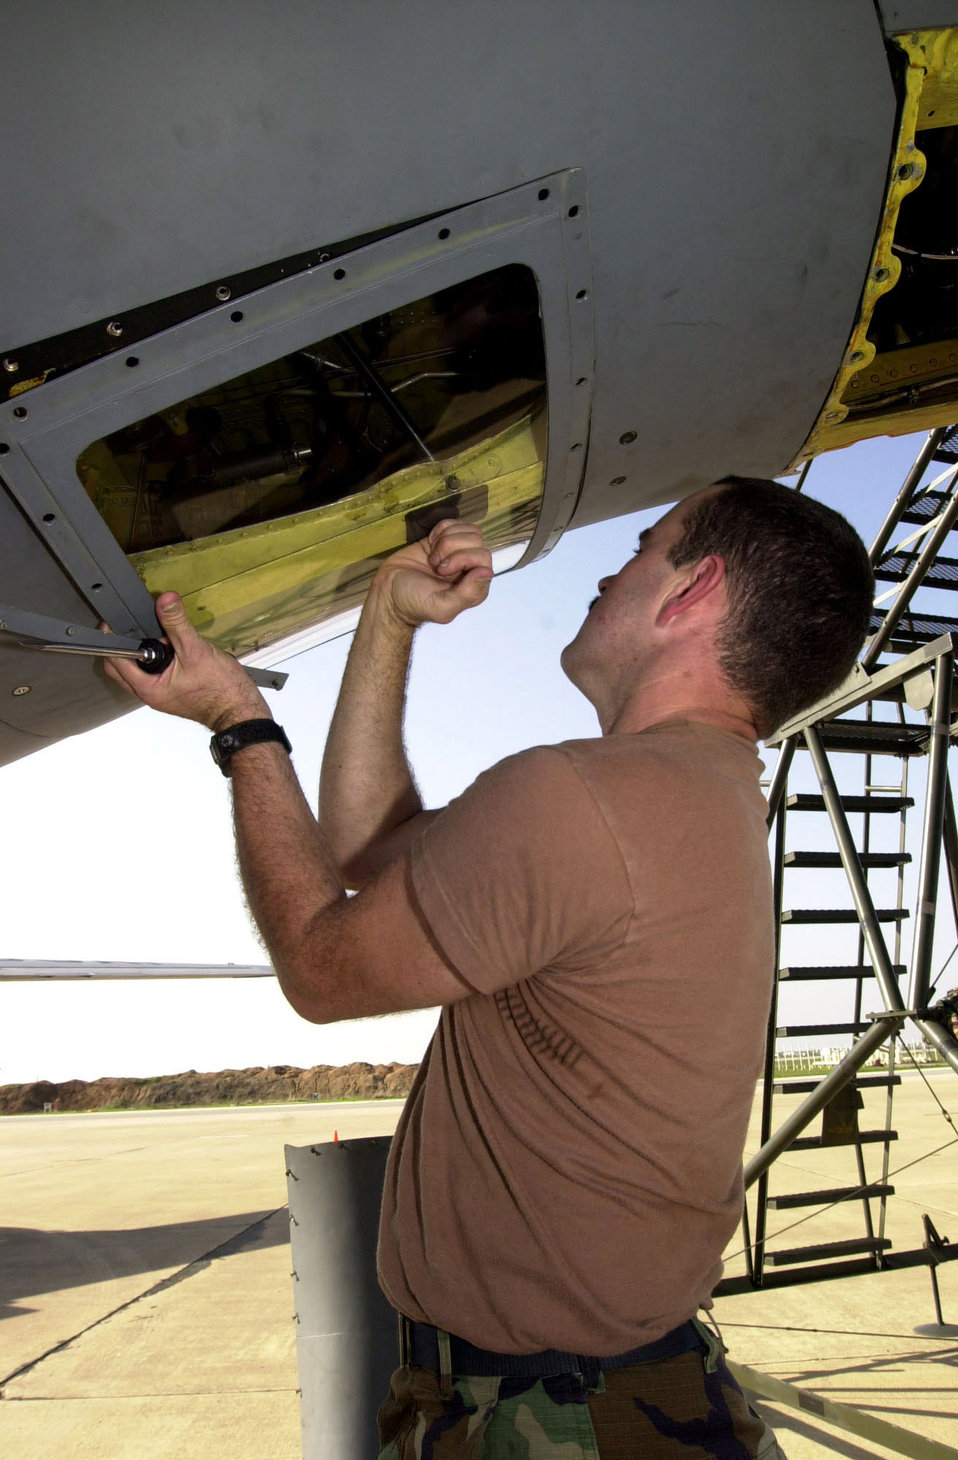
He does windows

OPERATION ENDURING FREEDOM -- Tech. Sgt. Greg Zegers, from the Nebraska Air National Guard’s 155th Air Refueling Wing, replaces the window through which the boom operator looks on a KC-135R Stratotanker at an operating location in support of the U.S. Central Command execution of Operation Enduring Freedom.